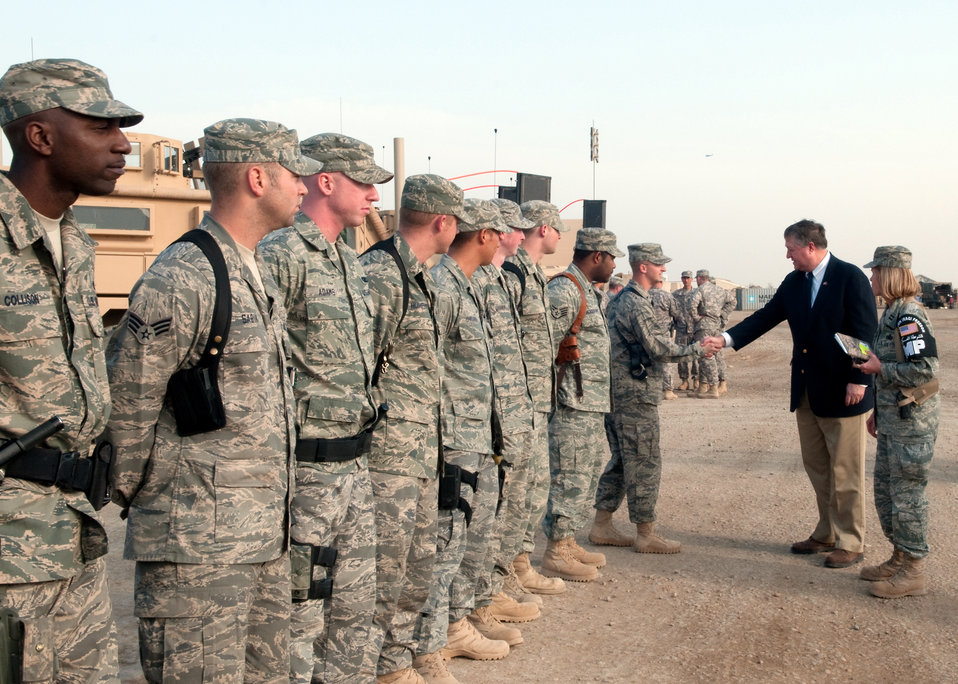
SecAF visits Ali Base, Iraq

Capt. Jutta Arkan introduces her team of Joint Expeditionary Tasking Airmen to Secretary of the Air Force Michael Donley Jan. 31, 2010, during his visit to Ali Base, Iraq. Captain Arkan is the commander of the Provost Marshall's Office. The Joint Expeditionary Tasking Airmen are assigned to the U.S. Army, 4th Brigade Combat Team, 1st Armored Division, Special Troops Battalion.